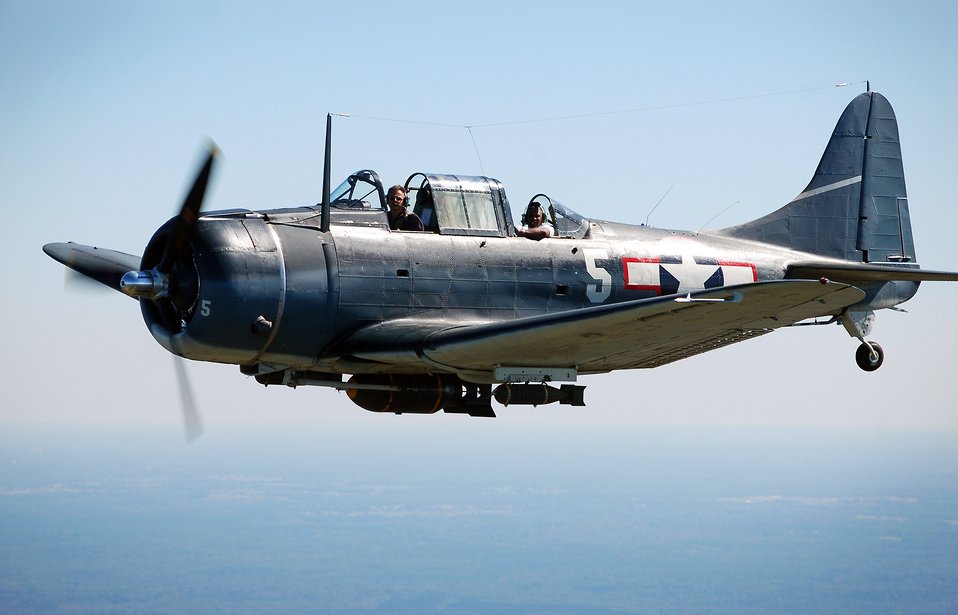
Dauntless history in flight

A vintage World War II aircraft, the SBD Dauntless, flies over Falcon Field during the Great Georgia Air Show as part of Air Force Week Atlanta Oct. 12 over Peachtree City, Ga.